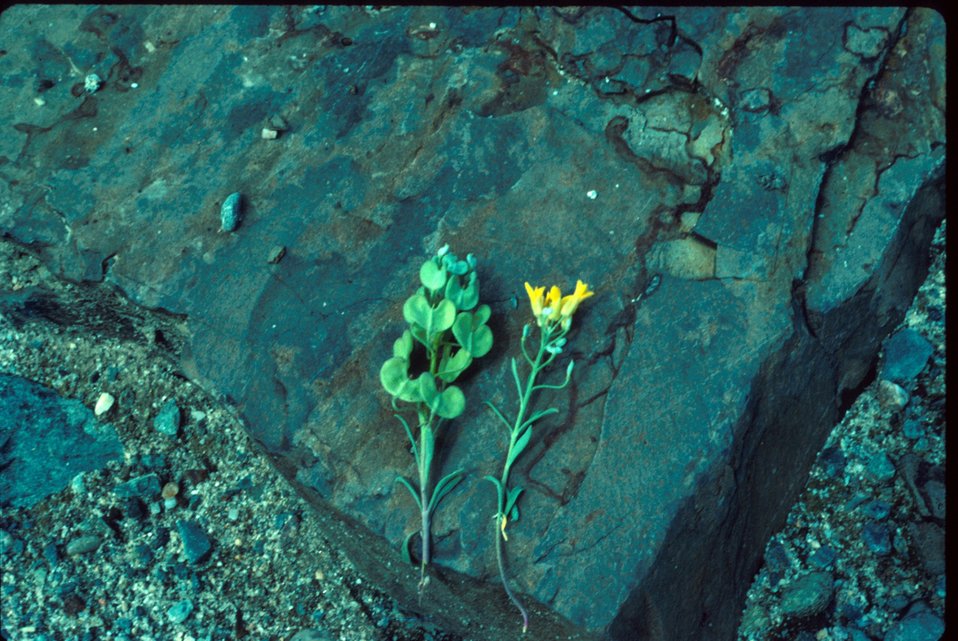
Physaria chambersii Twin bladder pod Wildflower